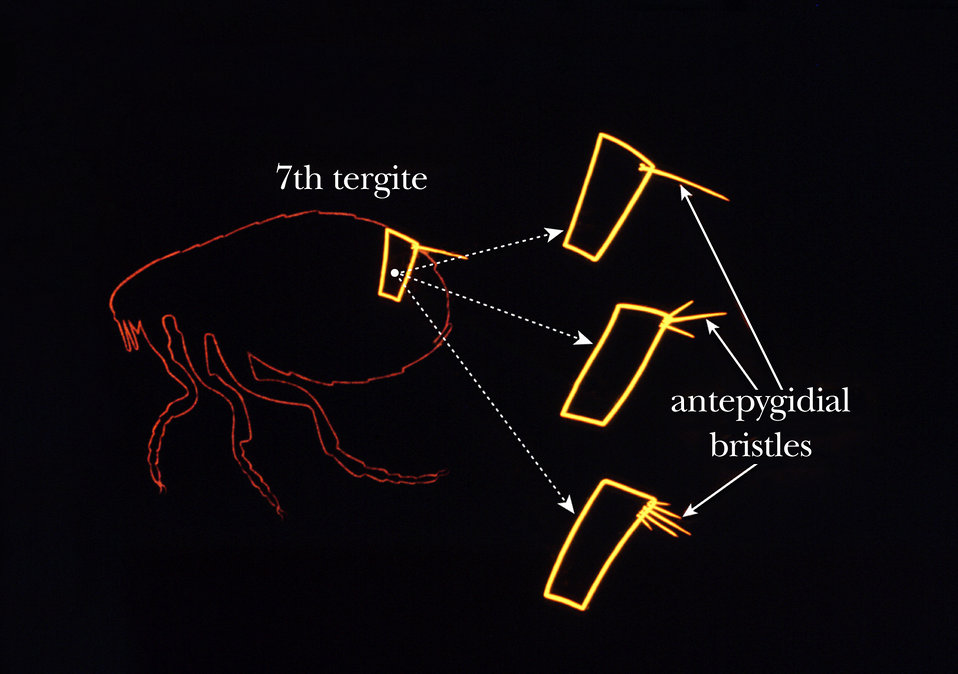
This illustration shows some of the identifying morphologic characteristics found on the abdomen of a typical flea.